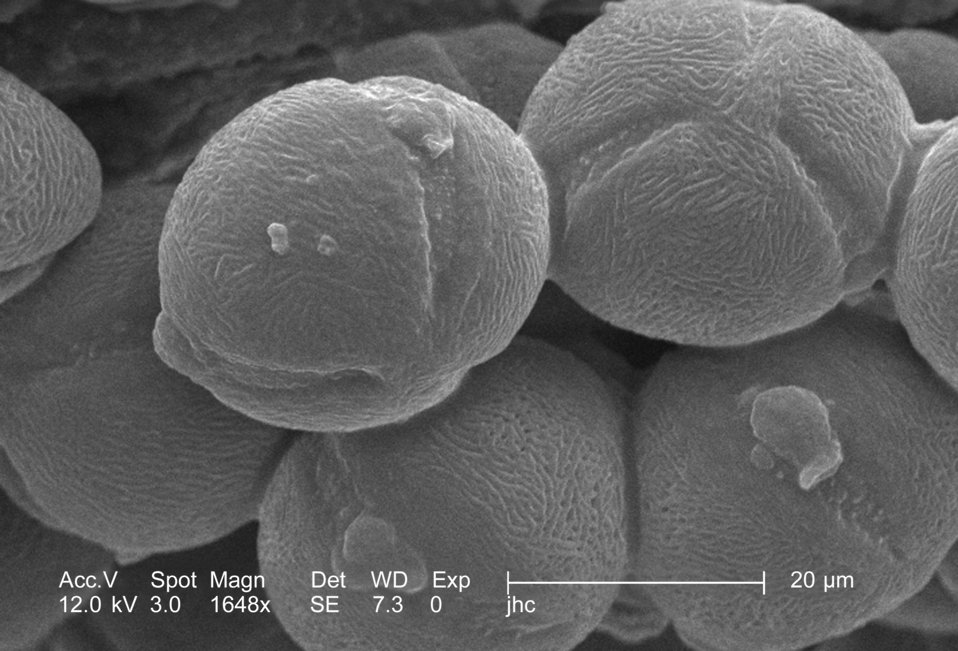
Under a high magnification of 1648x, this scanning electron micrograph (SEM) revealed some of the morphologic ultrastructure displayed by a number of pollen grains found within the dehisced, or split open, anther of a yellow "Fireworks" sundrops, Oenothera fruticosa flower. These pollen grains were of the "tricolpate" type of pollen, which means that their outer surface was traversed from pole to pole, by three symmetrically placed furrows. The textured surface also identified these grains as the "reticulate" type. Note the round shape of these grains, indicating that they had yet to undergo a drying process, in order to become ready to be disseminated into the plants environment.